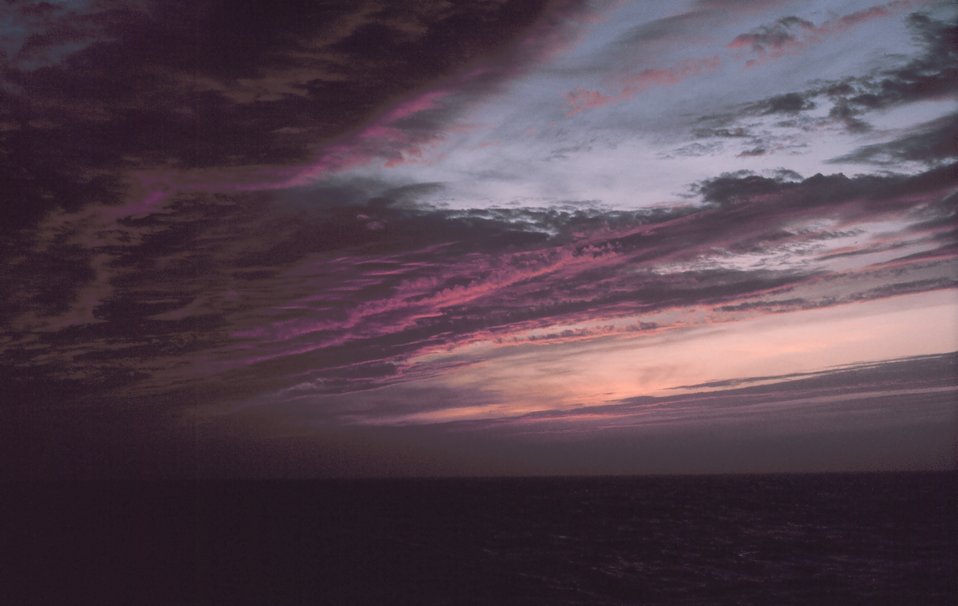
Parallel cloudbands at sunset.